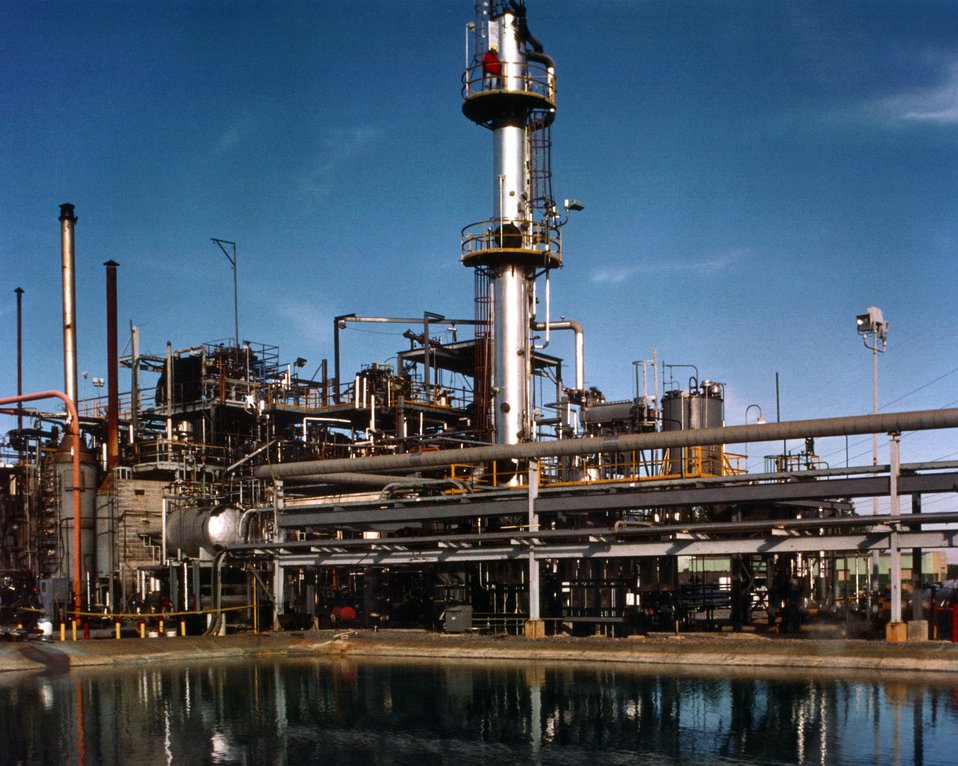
CLOSE-UP VIEW OF ADVANCED COAL LIQUEFACTION R&D FACILITY.